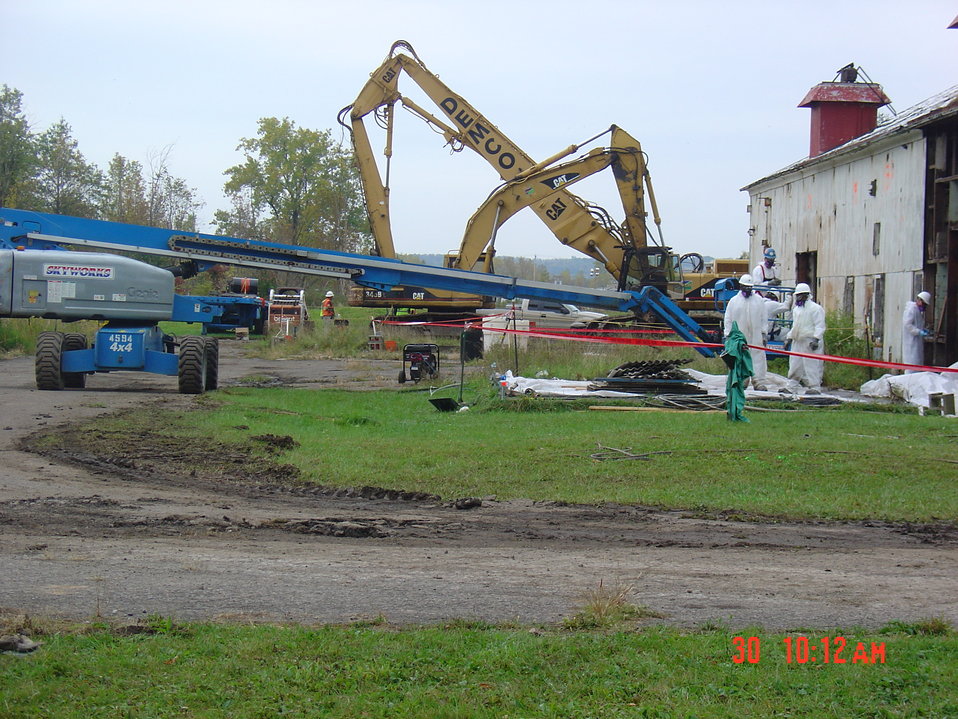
Building 401 asbestos removal and equipment.

Activities from the Niagara Falls Storage Site, which is associated with the former Lake Ontario Ordnance Works. Formerly Utilized Sites Remedial Action Program (FUSRAP), a program initiated in 1974 to identify, investigate and clean up or control sites that were part of the Nation's early atomic energy and weapons program. Activities at the sites that are eligible for FUSRAP were conducted by Manhattan Engineer District (MED) or the Atomic Energy Commission (AEC), both predecessors of the Department of Energy (DOE). The U.S. Army Corps of Engineers was assigned management of FUSRAP by Congress in 1997.